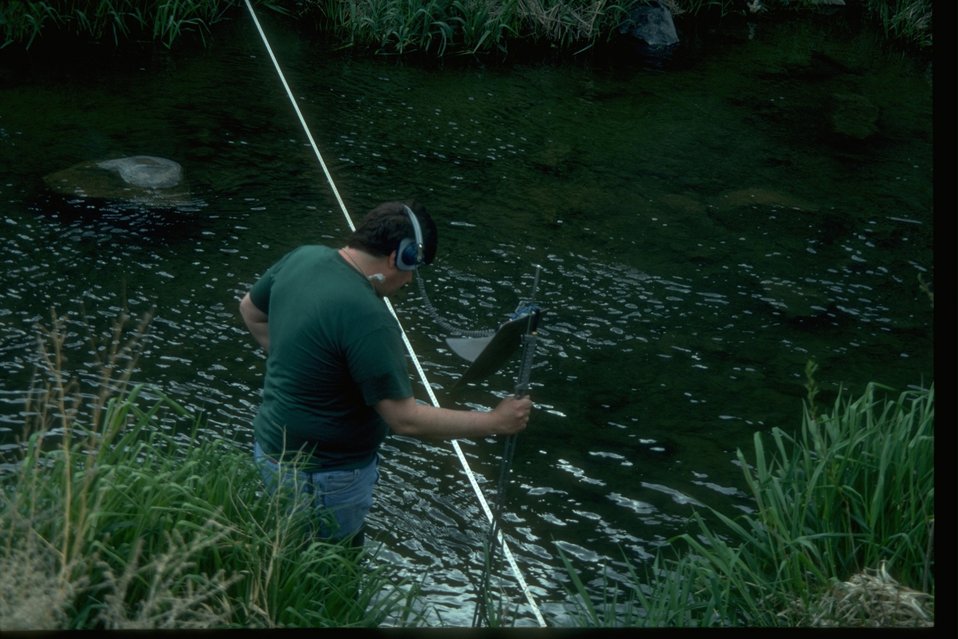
Hydrologist measures stream flow in Douglas Creek.